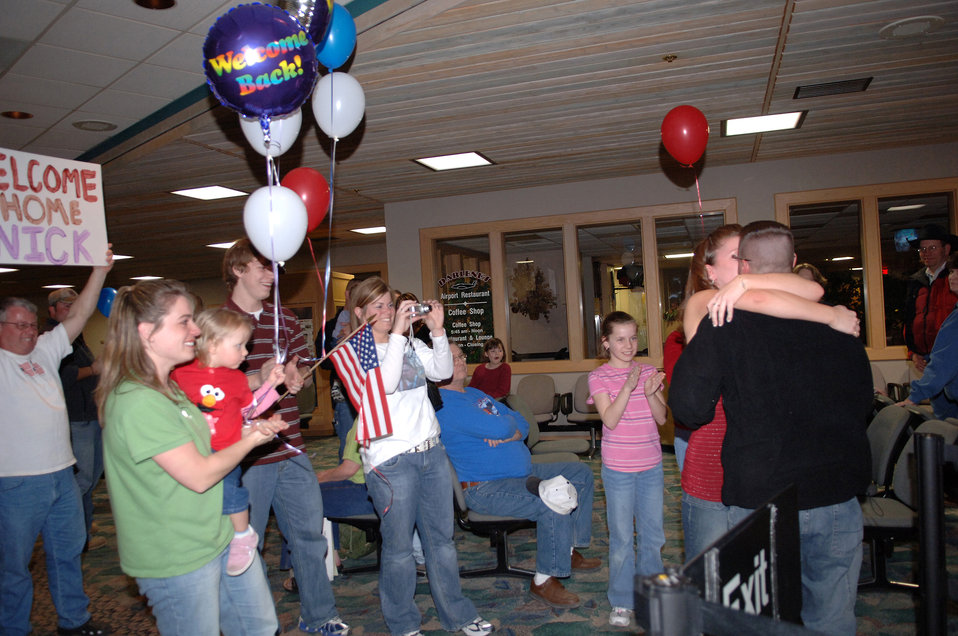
Welcome home to South Dakota

Staff Sgt. Nick Shatek is greeted home by Alyssa Laures and family at Rapid City Regional Airport March 21. Sergeant Shatek, assigned to the 28th Security Forces Squadron, returned from a deployment to Southwest Asia in support of operations Iraqi Freedom and Enduring Freedom.